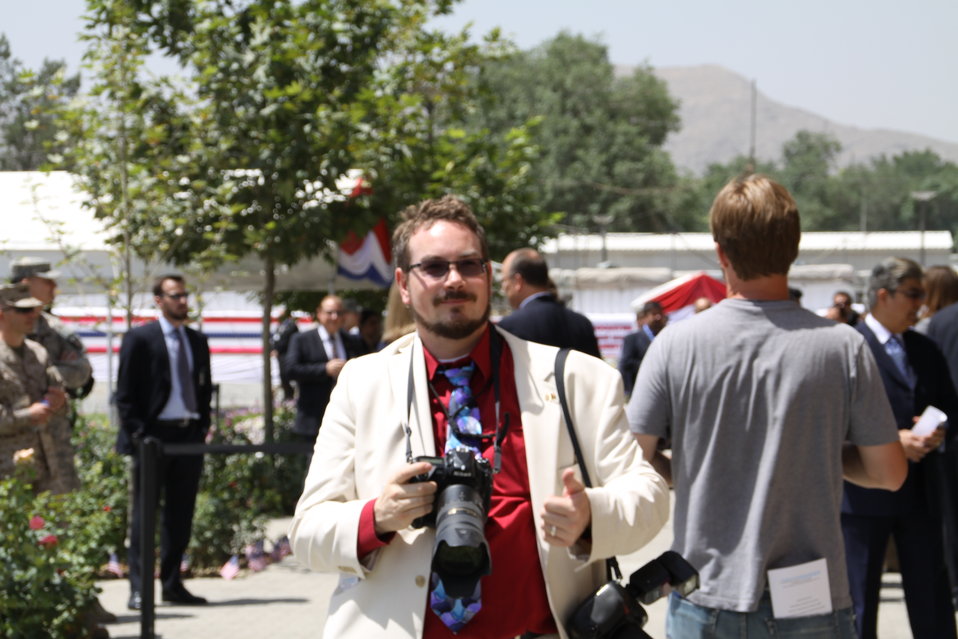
Kabul Official July 4th Celebration